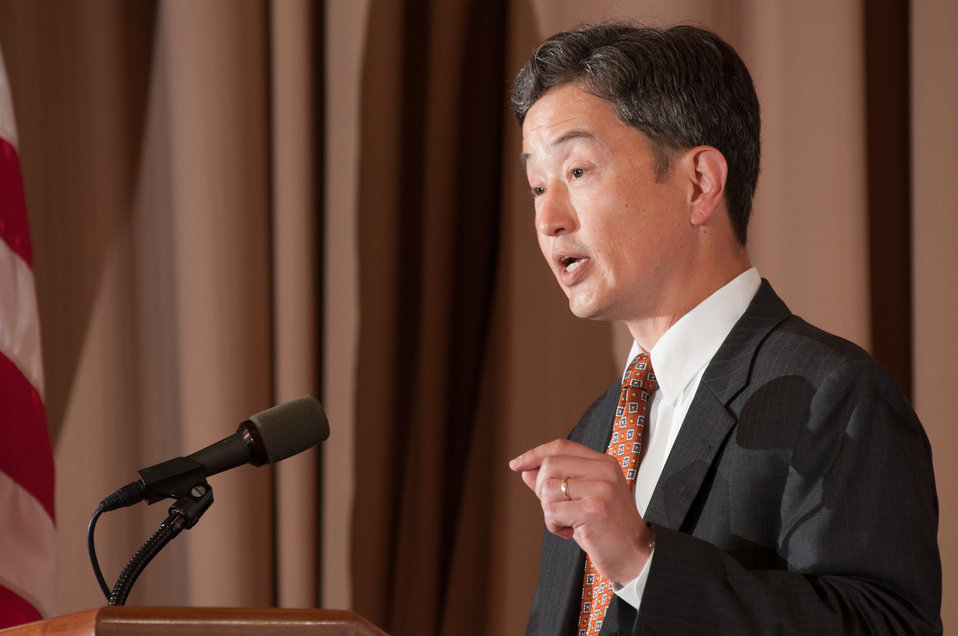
U.S. Department of Agriculture (USDA), Food Safety and Inspection Service (FSIS) Deputy Under Secretary Brian Ronholm makes opening remarks for the USDA Asian Pacific American Heritage Month Observance, at the USDA headquarters in Washington, D.C., on Thursday, May 23, 2013. This year’s theme is “Building leadership; Embracing the Cultural Values and Inclusions.”